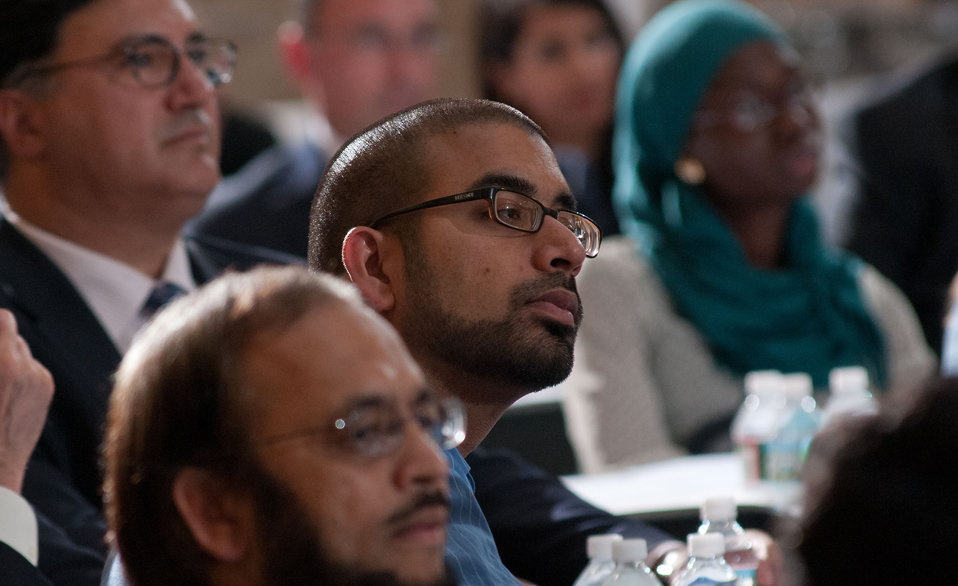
Guests listen to to speakers at the Iftar event, co-sponsored by the Iftar celebration, co-sponsored by the U.S. Department of Agriculture, U.S. Agency for International Development (USAID) and Islamic Relief USA, on Tuesday, August 7, 2012, in the USDA Whitten Building, in Washington, D.C. Ramadan is the month of fasting, intensive prayer, sacrifice and worship for Muslims around the world. Throughout this month, Muslims fast during the day, abstaining from consuming food from dawn to dusk and using this time to purify spiritually. Fasting reminds Muslims of the poverty and hunger suffered by many in the United States and worldwide. It is a connection with those who are hungry not through devotion, but through the many global factors that lead to hunger and famine. Iftar is the meal at which Muslims break their fast at sunset, usually by eating dates, according to the Prophetic tradition.